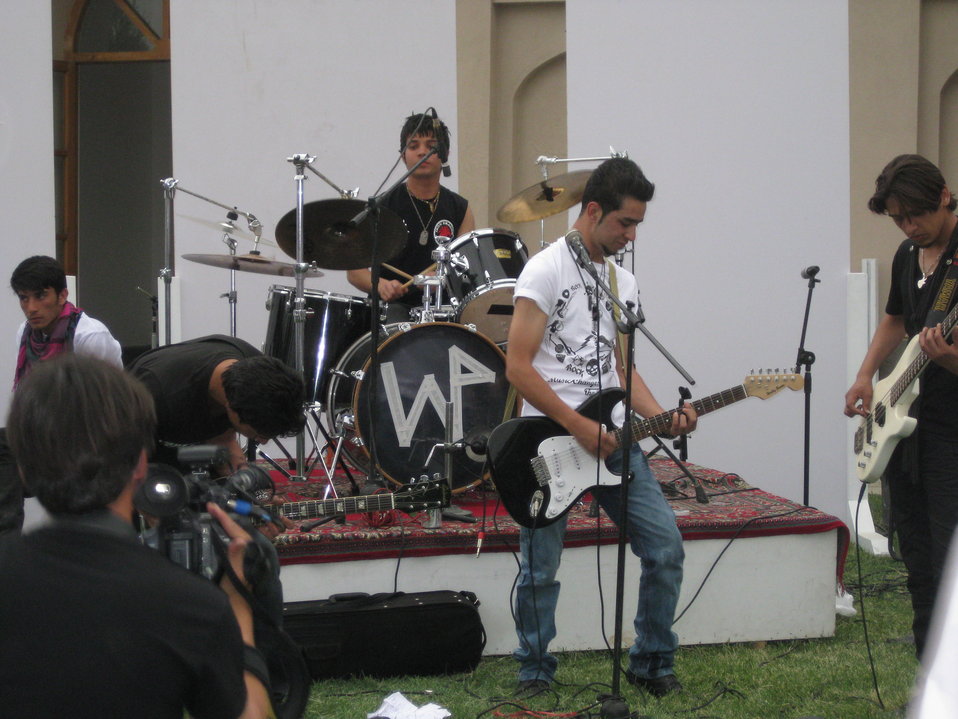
Afghan Youth Voices 108